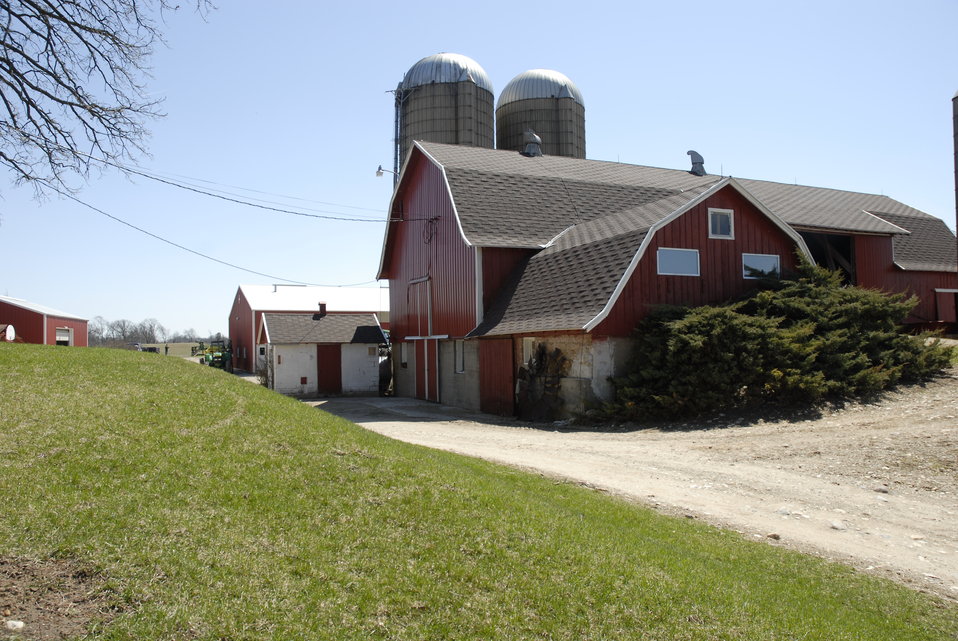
The sun shines down on the Gehrke farm in Elgin, Illinois on April 5, 2008.